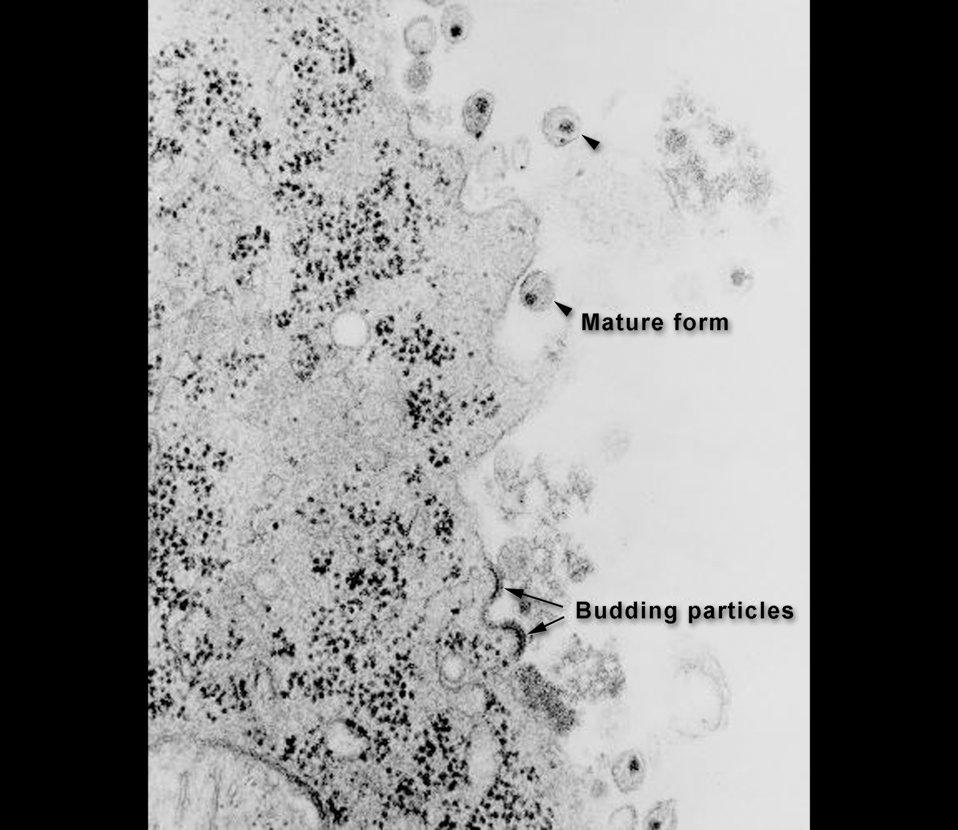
This transmission electron micrograph (TEM) depicts HIV-1 budding and free virions.